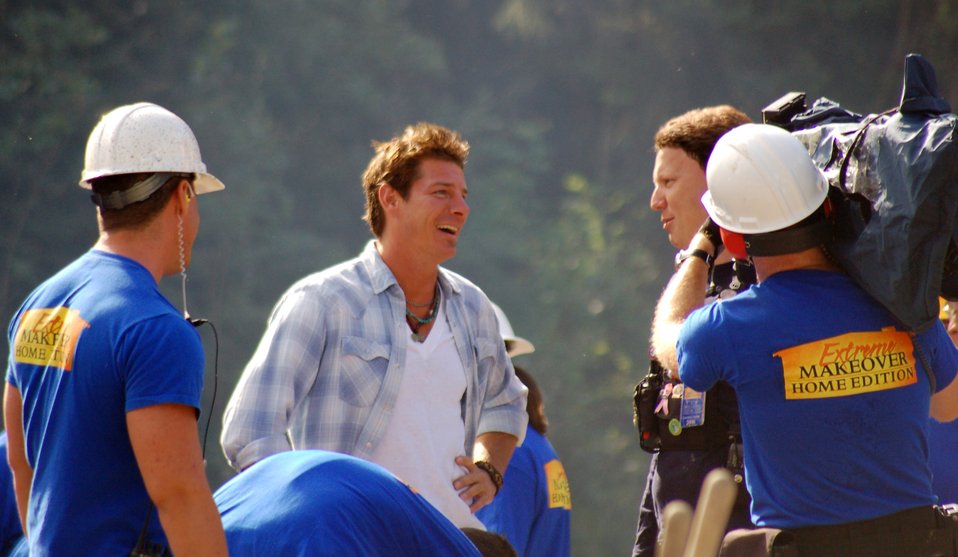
'Extreme Makeover: Home Edition,' military style

Ty Pennington, the star of ABC's